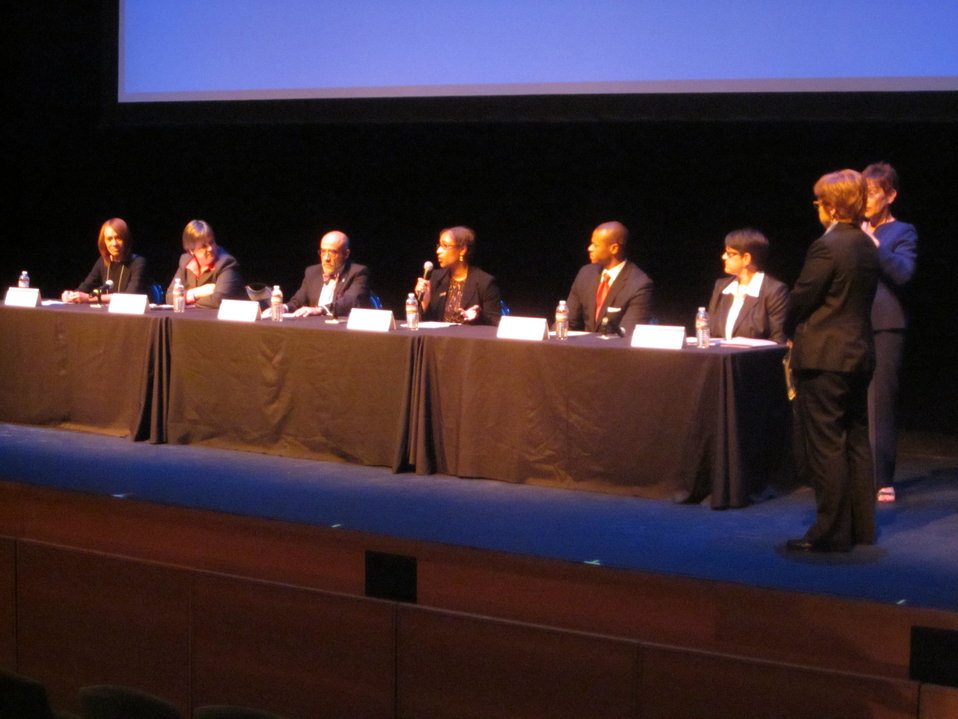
Baton Rouge Pics 046